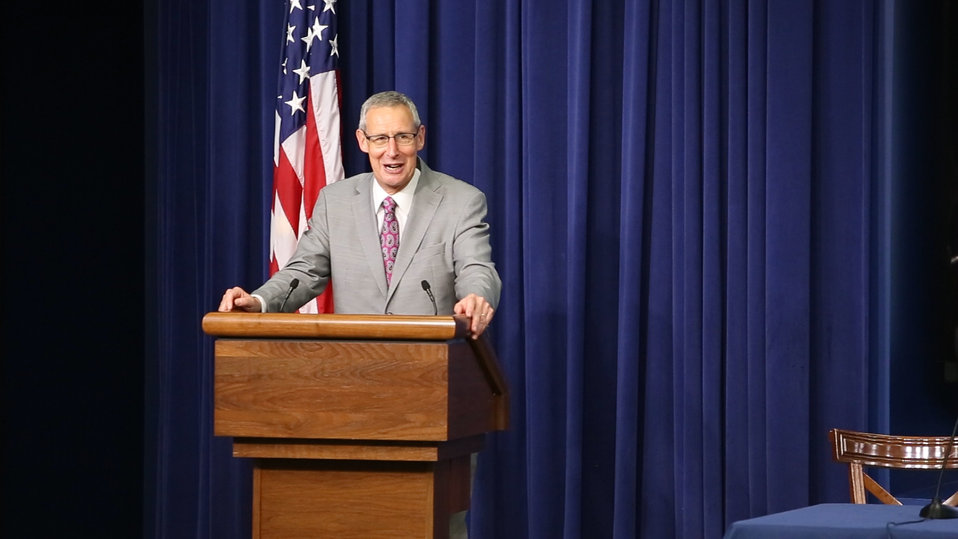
MVI 0179.MOV.Still001